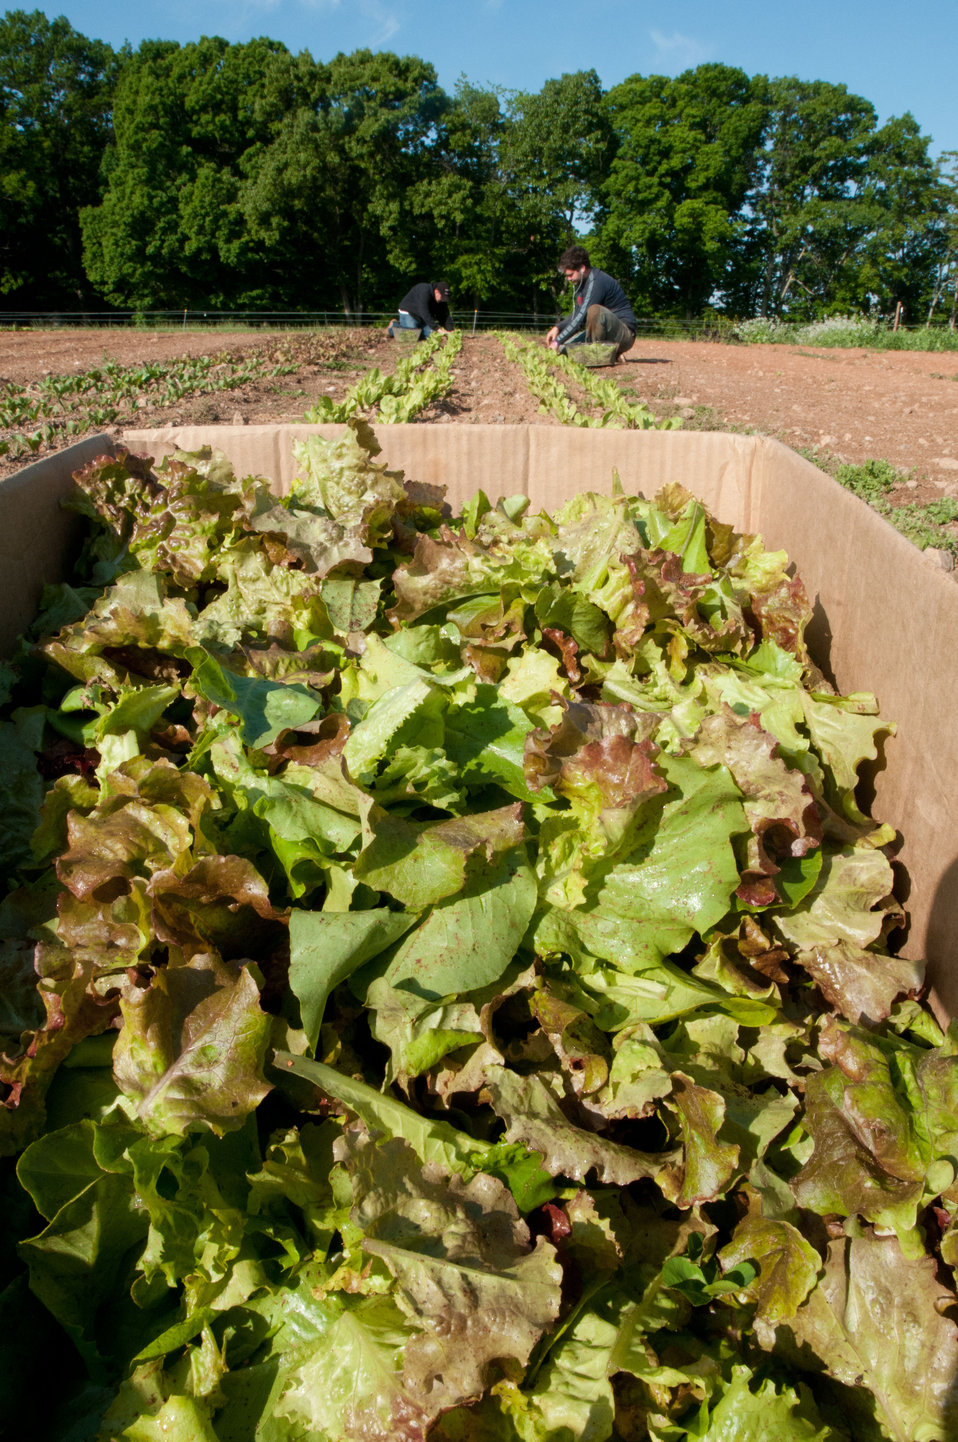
Andrew Myers (left) and Christopher Douherty hand harvest baby-lettuce leaves at the Manakintowne Specialty Growers, a 21-acre farm in Powhatan County, Virginia, on Friday, May 6, 2011. Specialty produce for chefs and markets of Richmond, Charlottesville and Williamsburg, is raised on the farm. The plants continue to grow leaves and can be harvested several times before they have to be replaced. Rotating the crop types and using proper intervals, maintain sustainable soil and plant health. This is one of the farms that produces unique greens such as French Sorrel, Pea Shoots, Frisee, Tat soi, Mizuna, Pink/green radish shoots, Sunflower shoots, Baby red mustard, Tuscan Kale, Beet greens. All harvested by hand, micro greens such as Pak choi, Tat soi, Mizuna, Purple kohlrabi, Shungiku (edible chrysanthemum), Ruby chard, Purple/Daikon/Triton radish, Red amaranth and Bull's Blood Beet as well as edible flowers such as African Blue Basil, Nasturtiums, Johnny Jump Ups, and Chive blossoms Dianthus (pinks).. The seasonal choices are listed by suppliers and ordered by members on Lulus Local Food website, the food is distributed to pick-up points in the Richmond area. Together, they offer a wide variety of household food staples and specialty fruits, vegetables, meats, soaps, eggs, cheeses, flowers, honey, pastas, sauces, syrups, baked goods, mushrooms, flour and grains from and for the Richmond area.